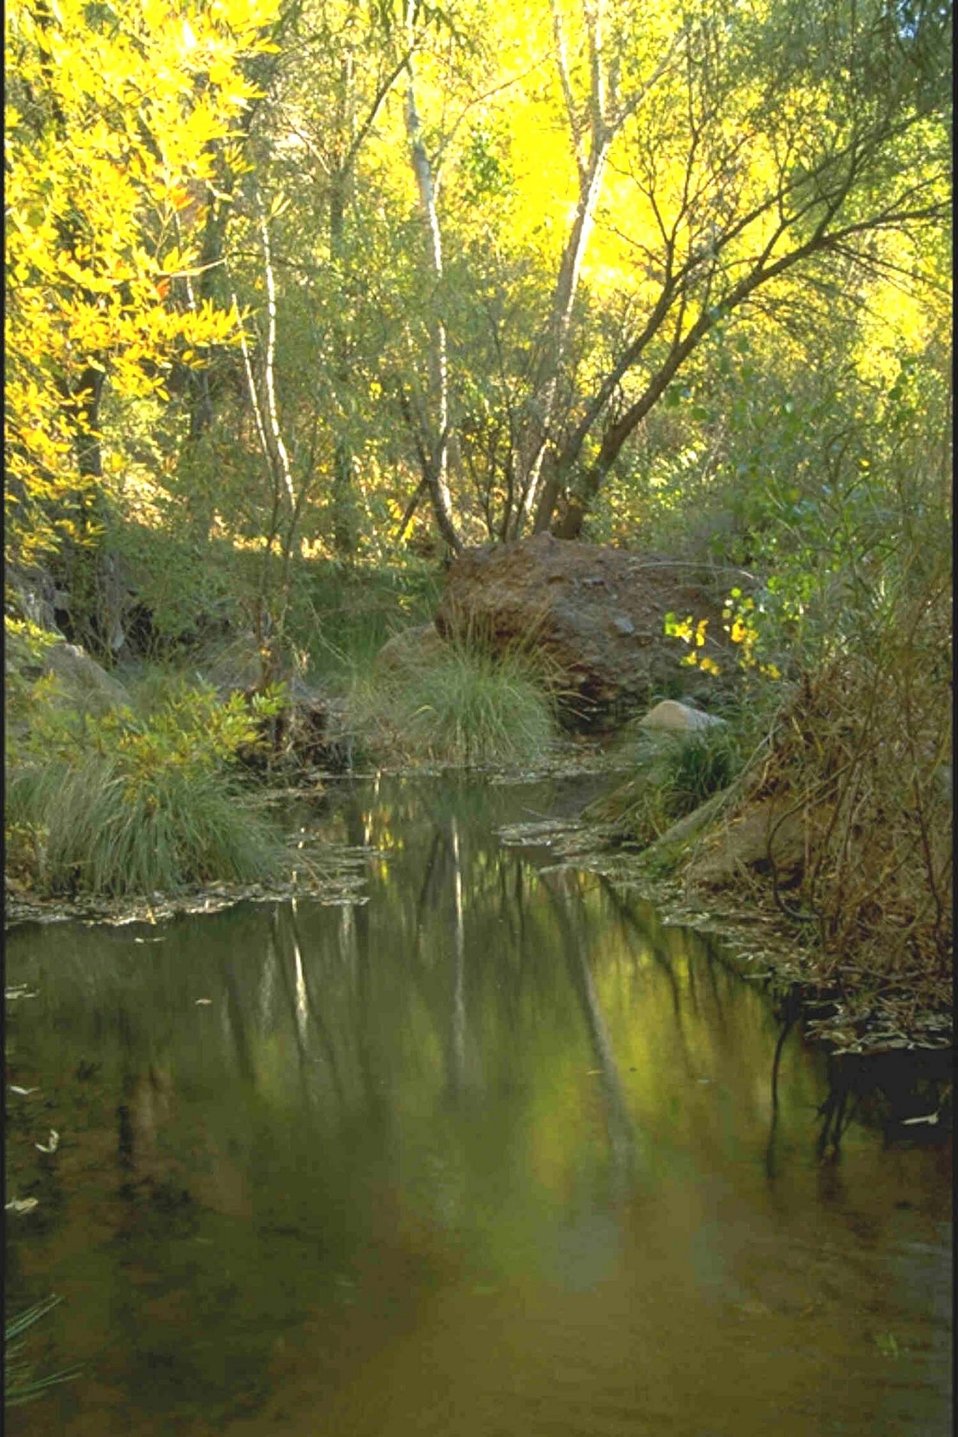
Fall colors brightens up a pool near the western end of Aravaipa Canyon.